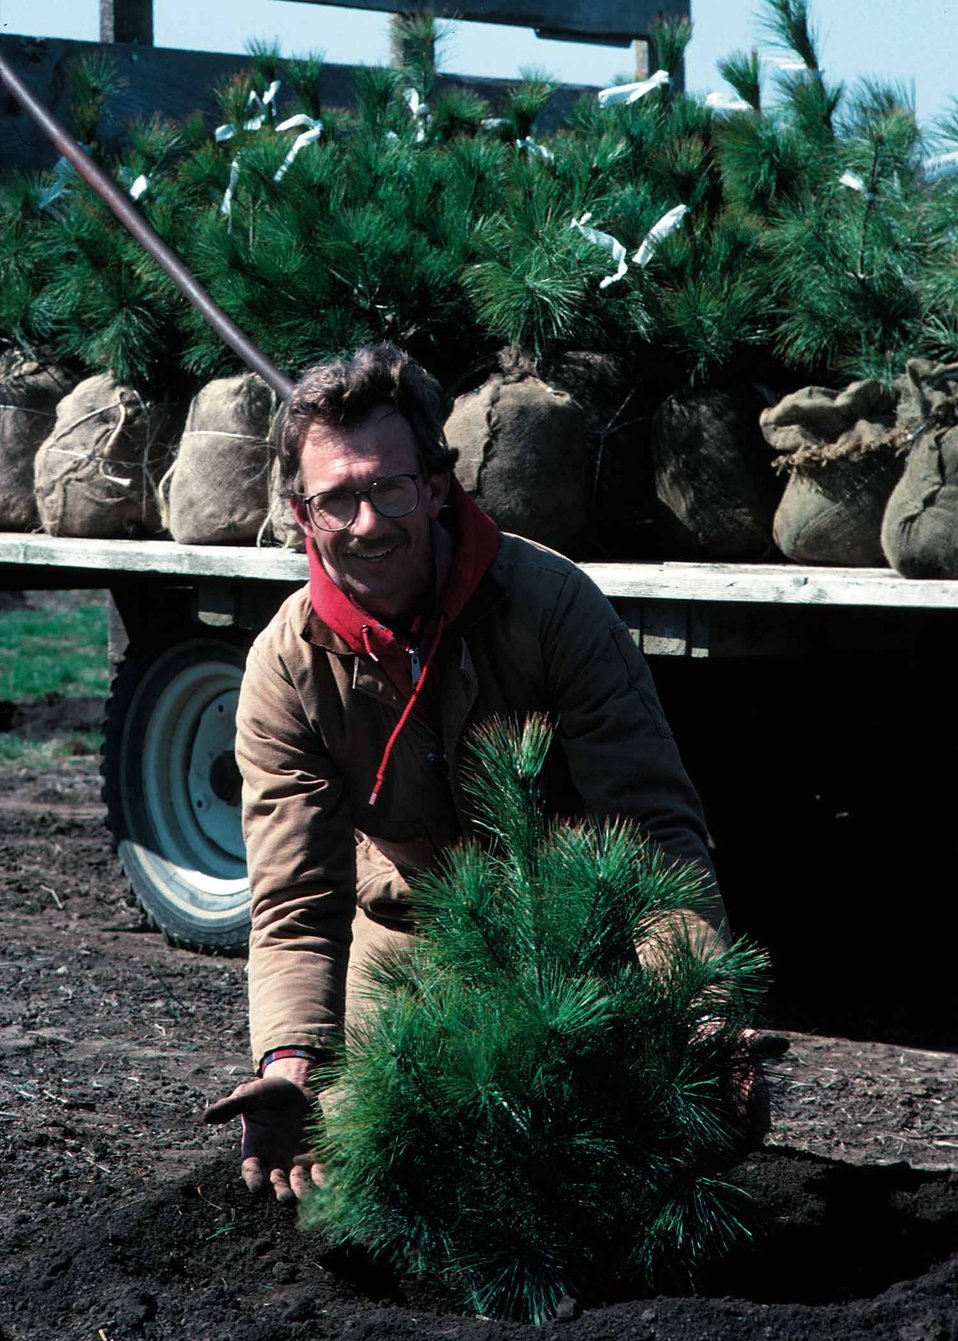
A Tama County farmer plants trees in his farmstead windbreak.